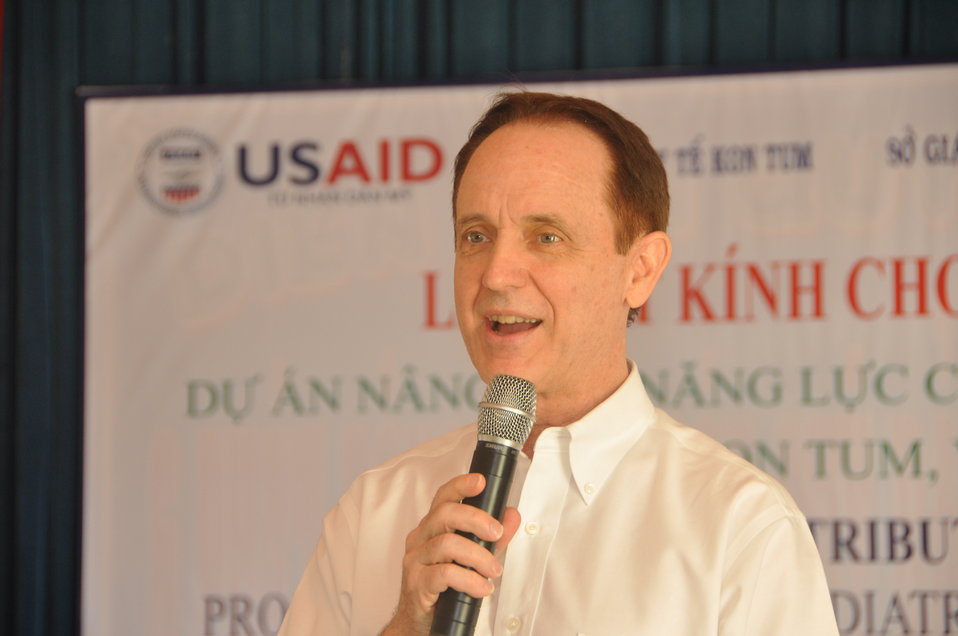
USAID Director Francis Donovan: School children in Dak To, Kon Tum Province, receive eyeglasses under a program supported by USAID and partners HKI and World Leraning